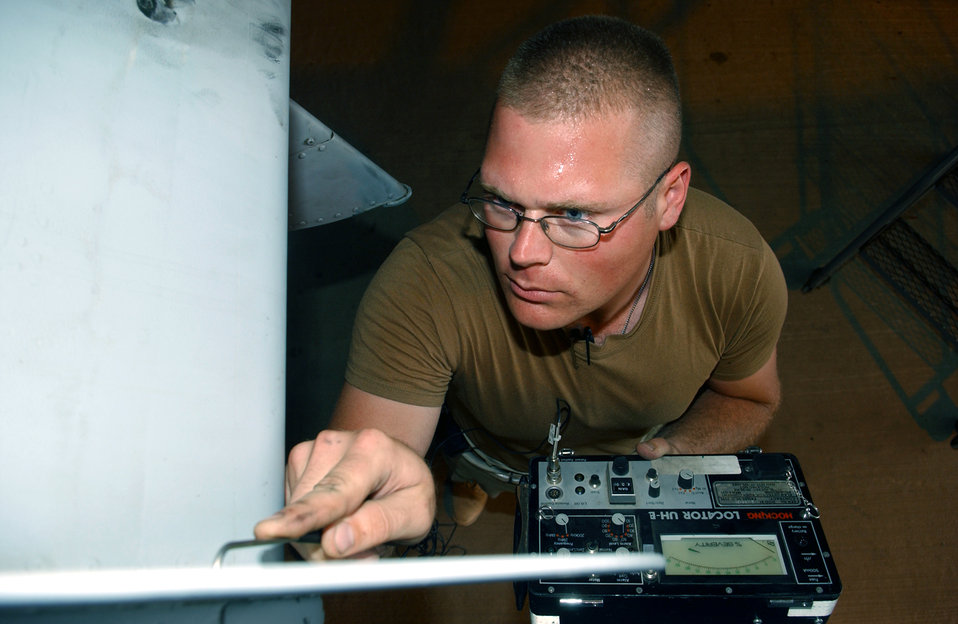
Checking 'current' situation

BAGRAM AIR BASE, Afghanistan -- Airman 1st Class Ryan Michalec checks for cracks in an A-10 Thunderbolt II using eddy currents. He is a nondestructive inspection technician with the 354th Expeditionary Aircraft Maintenance Squadron here. Airman Michalec is from Eielson Air Force Base, Alaska.